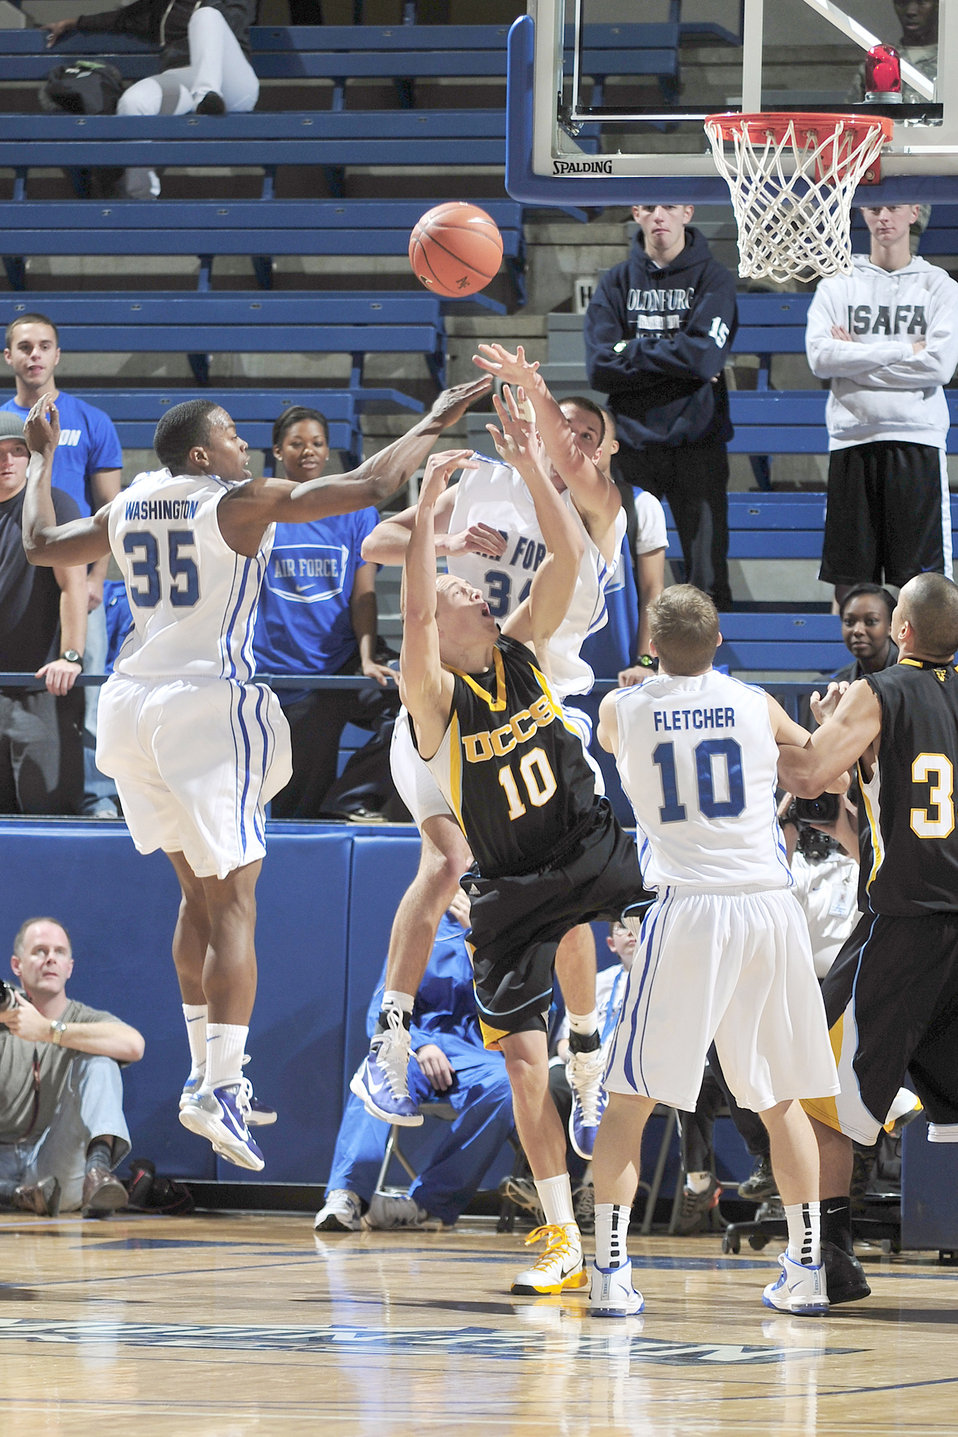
Falcons vs UCCS

The Falcons defense swarms against Mountain Lion guard Brent Jones during the Air Force home opener Nov.14, 2010, at the U.S. Air Force Academy's Clune Arena in Colorado Springs, Colo. The Falcons defeated UCCS 66-53 behind a balanced offensive attack and a stingy defense that held UCCS to just 1 of 14 from behind the arc.